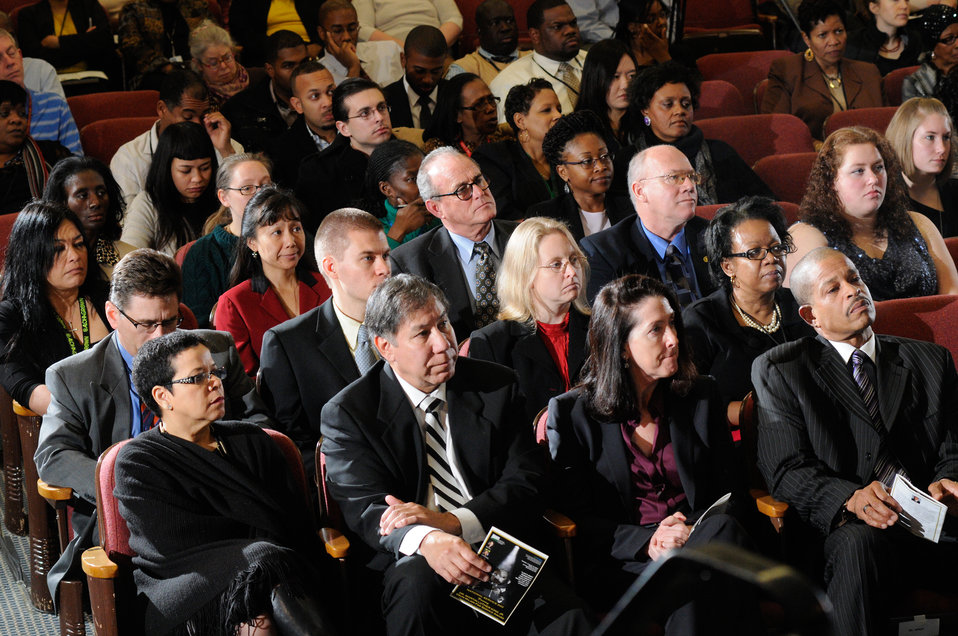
U.S. Department of Agriculture (USDA) leadership and awardees in the audience listen to Columbia University of Law, Professor of Law, Theodore Shaw speaks at the U.S. Department of Agriculture (USDA) Dr. Martin Luther King, Jr. National Service Day presentation of the Drum Major for Service Awards at the USDA Jefferson Auditorium, in Washington, D.C., on Tuesday, Jan. 15, 2013.